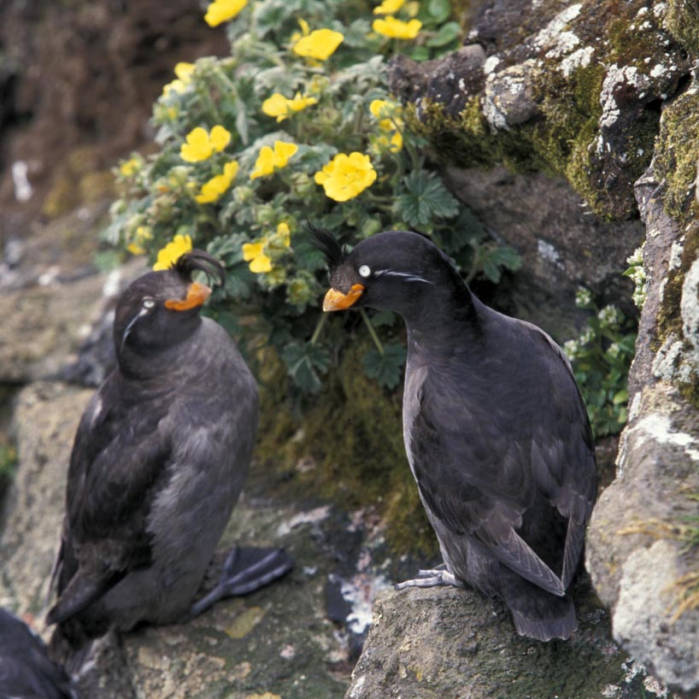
crested auklet pair

Alaska Maritime National Wildlife Refuge